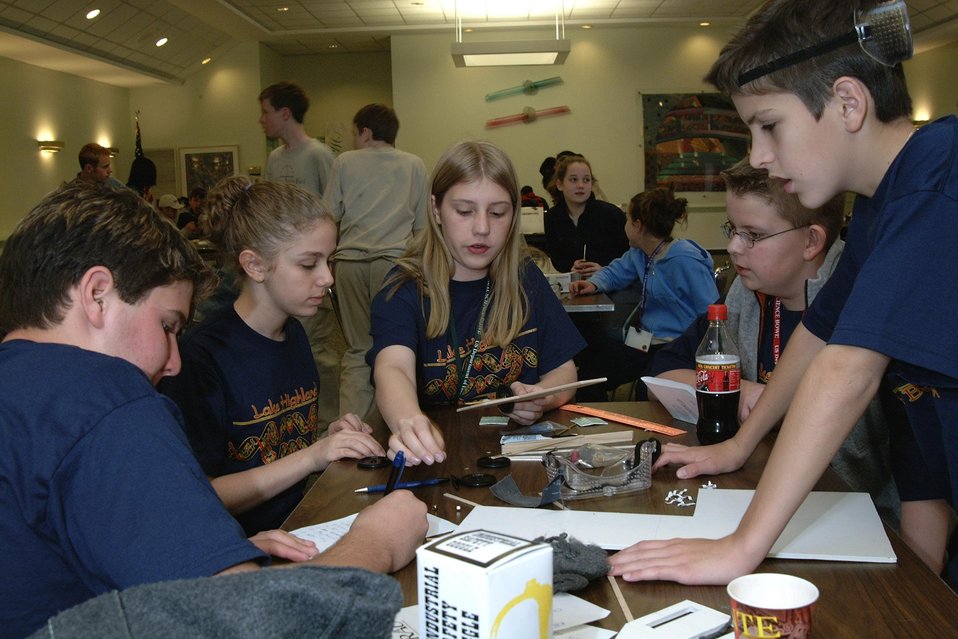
TEAM FROM LAKE HIGHLAND PREP. SCHOOL, ORLANDO, FL, CONFERS ON DESIGN OF THEIR MODEL SOLAR CAR.

THE DEPARTMENT OF ENERGY SPONSORED THE FIRST NATIONAL MIDDLE SCHOOL SCIENCE BOWL ON MARCH 21-24, 2002 IN WASHINGTON, DC AT DOE HEADQUARTERS FORRESTAL BUILDING. ON MARCH 23RD THE COMPETITION INCLUDED A MODEL SOLAR CAR RACE HELD AT THE NATIONAL 4-H CONFERENCE CENTER, CHEVY CHASE, MD. THE MODEL CARS WERE DESIGNED AND CONSTRUCTED BY THE TEAM MEMBERS.